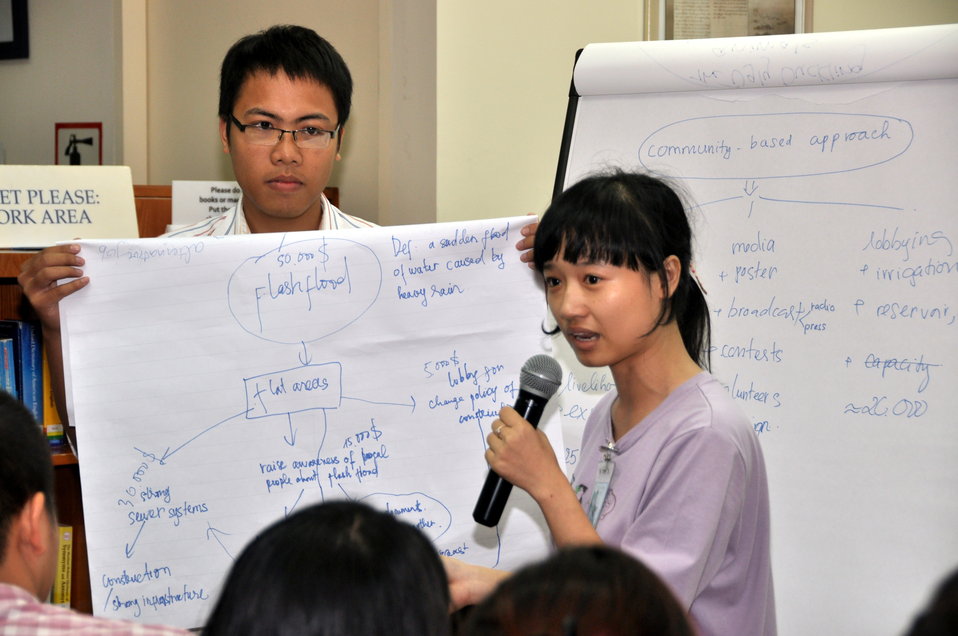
Climate Change Talk at the American Center

Hanoi, May 28, 2013.